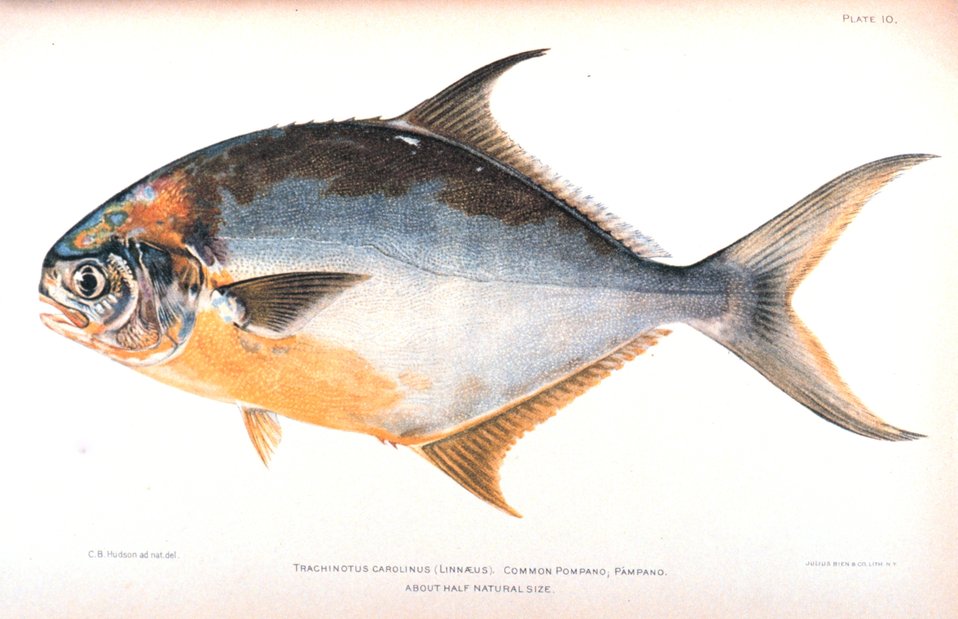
Trachinotus carolinus (Linnaeus). Common pompano; Pampano. In: 'The Fishes of Porto Rico', by Barton Warren Evermann and Millard Caleb Marsh. Bulletin of the United States Fish Commission, Vol. XX for 1900. First Part. P. 350, Plate 10.